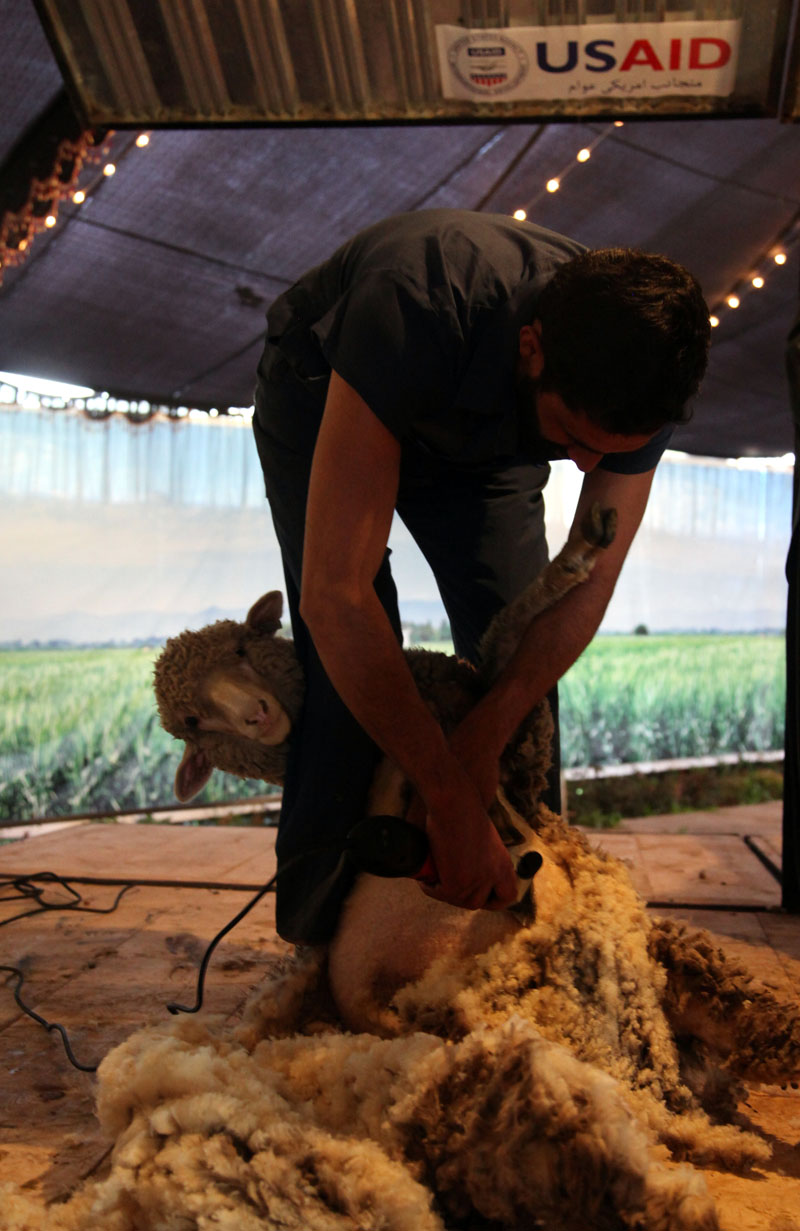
Sheep Shearing Demo